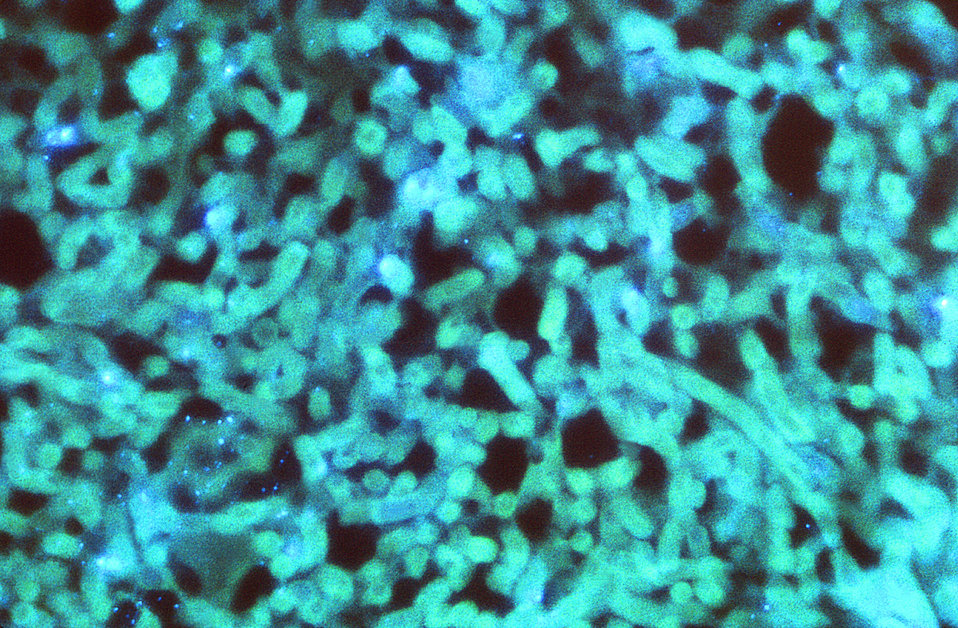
Magnified 562X this photomicrograph, stained using a fluorescent antibody (FA) staining technique (NOT stained using a 'Candida' conjugate) revealed the presence of Aspergillus sp. organisms, in a case of aspergillosis.What is Aspergillus?